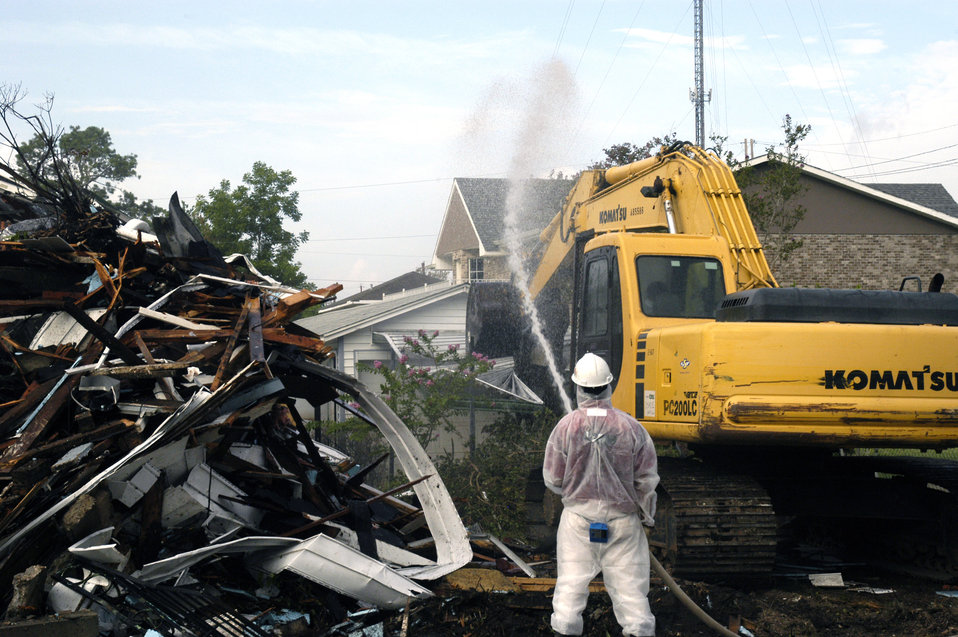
Many of the older homes and buildings in the New Orleans, LA, locale that were destroyed by Hurricane Katrina contained asbestos material (i.e. asbestos roofing tiles, transite siding, insulation, floor tiles, and popcorn ceilings). The U.S. Army Corps of Engineers (USACE) was mandated to follow strict environmental protocols in the demolition of these homes that were designated Regulated Asbestos Containing Material (RACM) demolitions. Prior to and during the demolition of the RACM house, water was constantly sprayed onto the building to prevent the asbestos containing material from becoming “friable” (airborne).